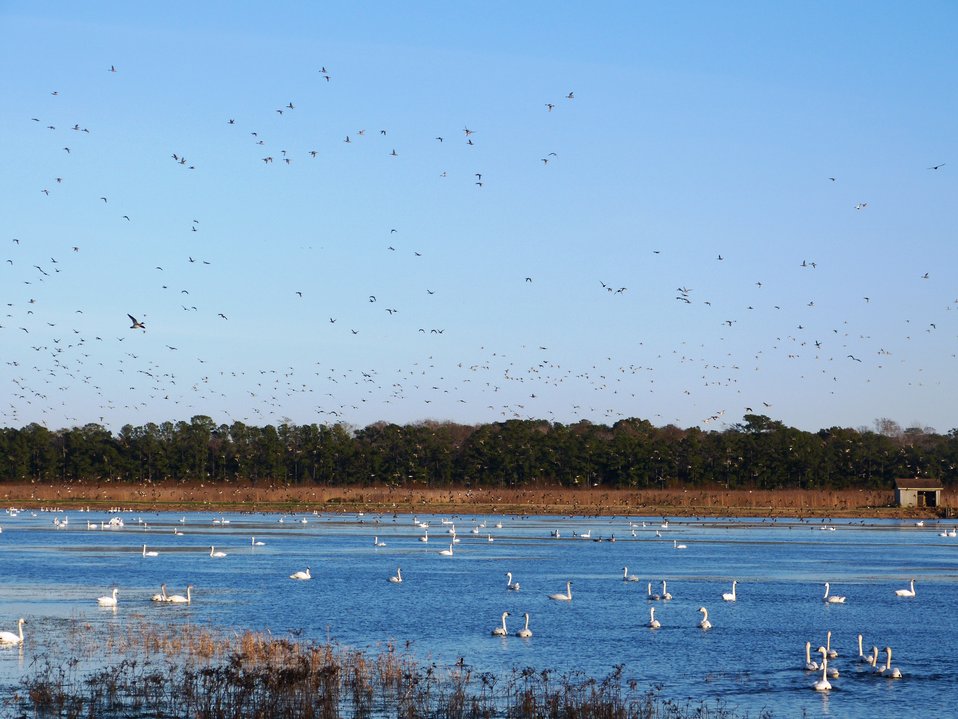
A mixed flock - 1

At Mattamuskeet National Wildlife Refuge in North Carolina. The Refuge’s prime location along the Atlantic Flyway makes it a vitally important stopover for wintering waterfowl.

In total, the Refuge attracts more than 200,000 ducks, geese and swans from November through February.